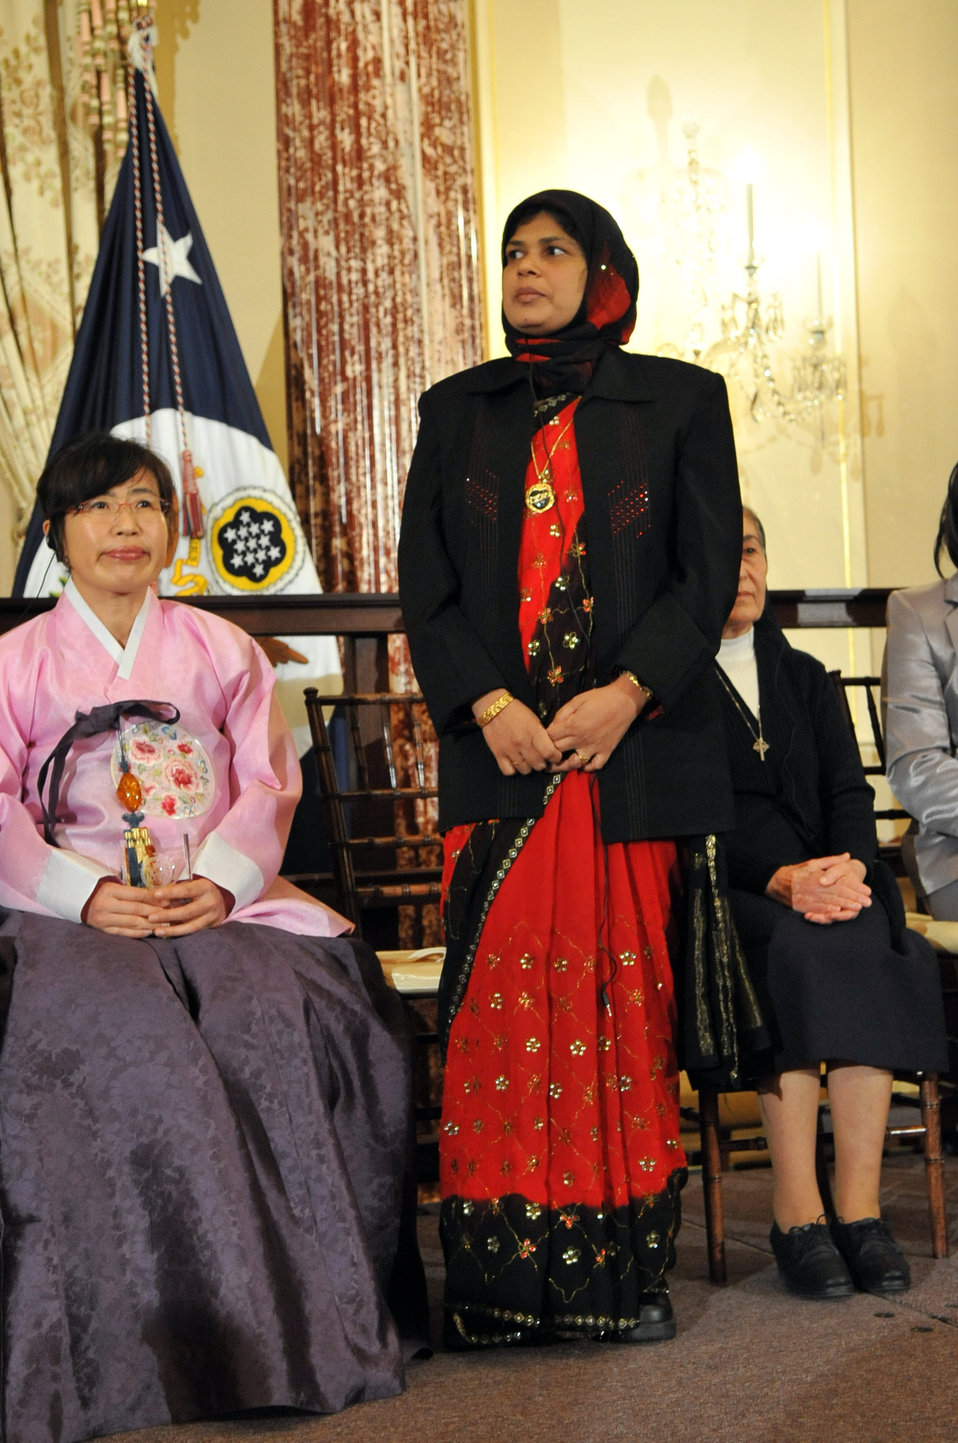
Honoree Jansila Majeed of Sri Lanka stands at the 2010 International Women of Courage Awards at the U.S. Department of State, Washington, D.C. March 10, 2010.